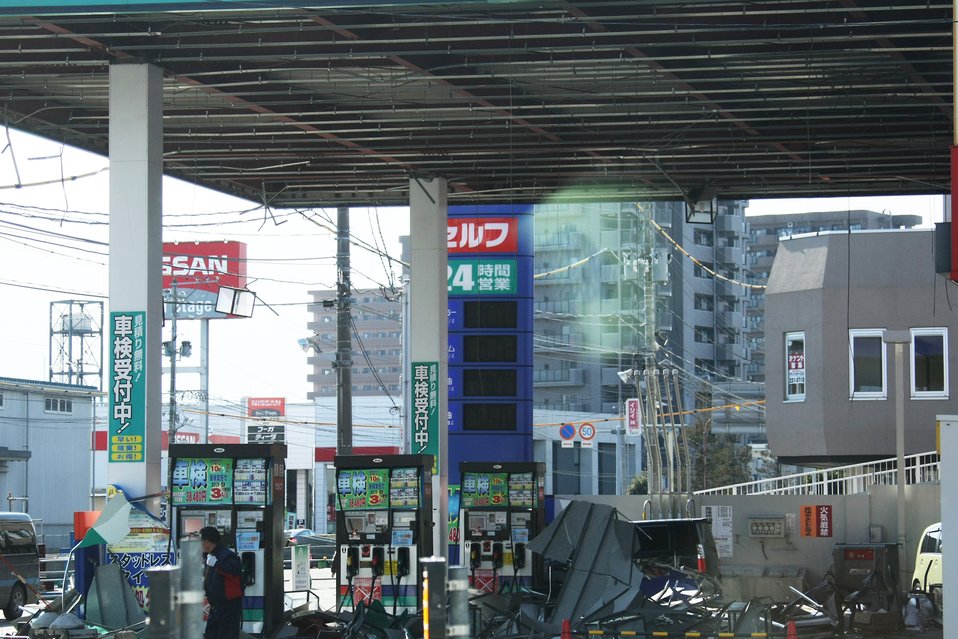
Disaster Relief Support

Disaster Zone at Sendai City.